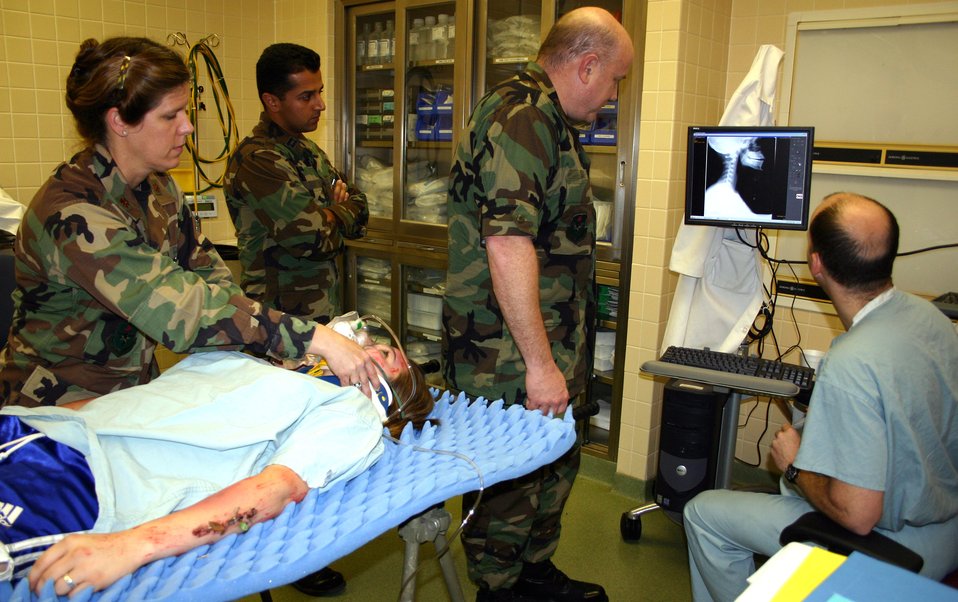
Advanced trauma life support training returns to Wilford Hall

Madison High School student Amy Klar simulates being a patient with life-threatening injuries during Advanced Trauma Life Support training at Lackland Air Force Base, Texas. This phase of the training dealt with initial assessment. From left are Maj. Brenda Frye, Capt. Zulfiqar Shah, Lt. Col. (Dr.) David Smith and Maj. (Dr.) Daniel Bonville.